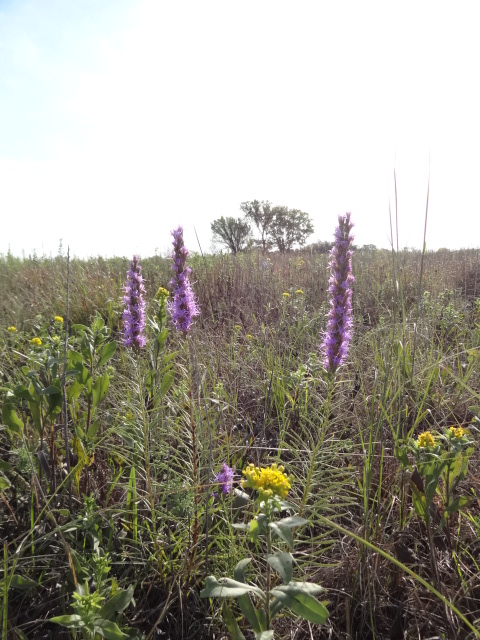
Prairie Wildflowers

Blazing star (Liatris punctata) at Marais des Cygnes National Wildlife Refuge.